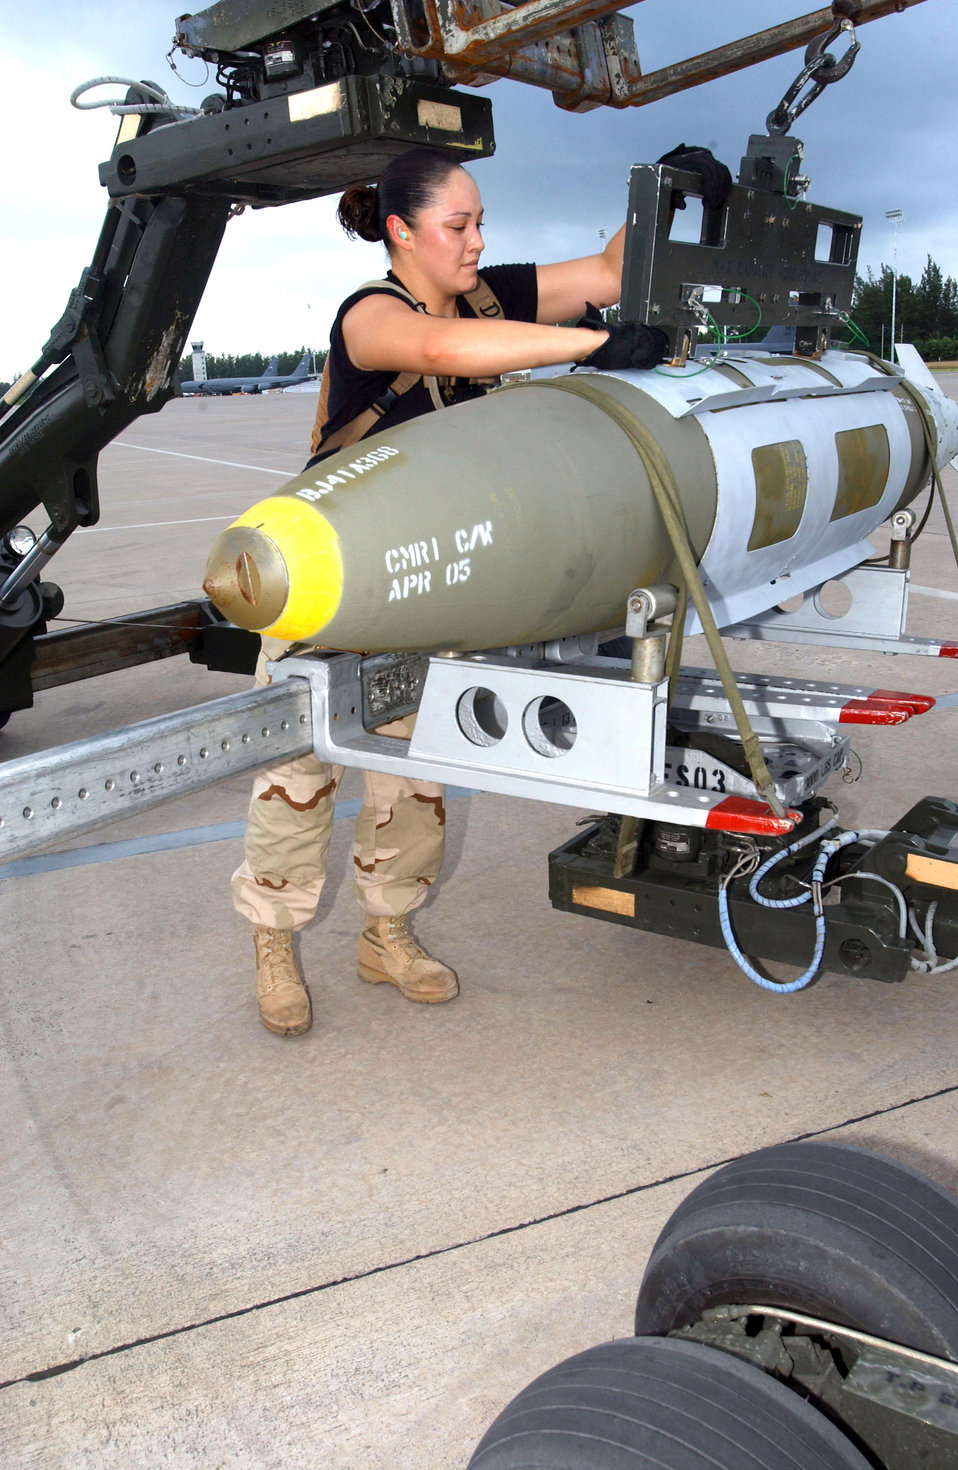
B-52 aids ground troops under small arms fire

OPERATION ENDURING FREEDOM -- Senior Airman Stephanie Lopez straps a joint-direct attack munitions that will be loaded on a B-52 Stratofortress to a bomb-lift vehicle. She is a weapons loader with the 40th Expeditionary Maintenance Squadron at a forward-deployed location and is from Minot Air Force Base, N.D.